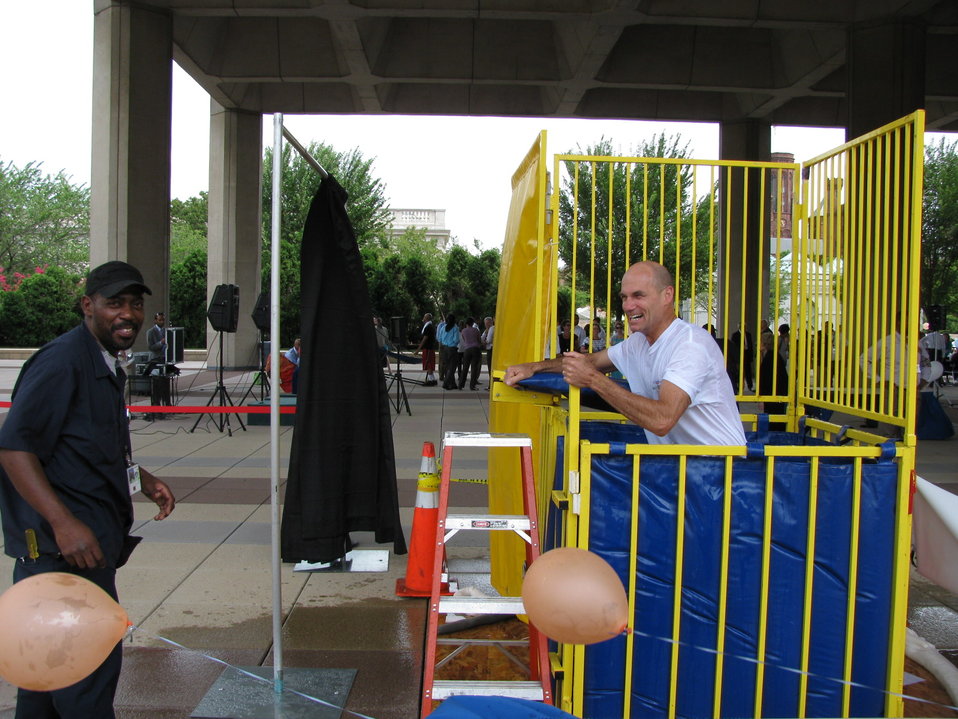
Administrator for National Nuclear Secutrity Agency Tom D’Agostino